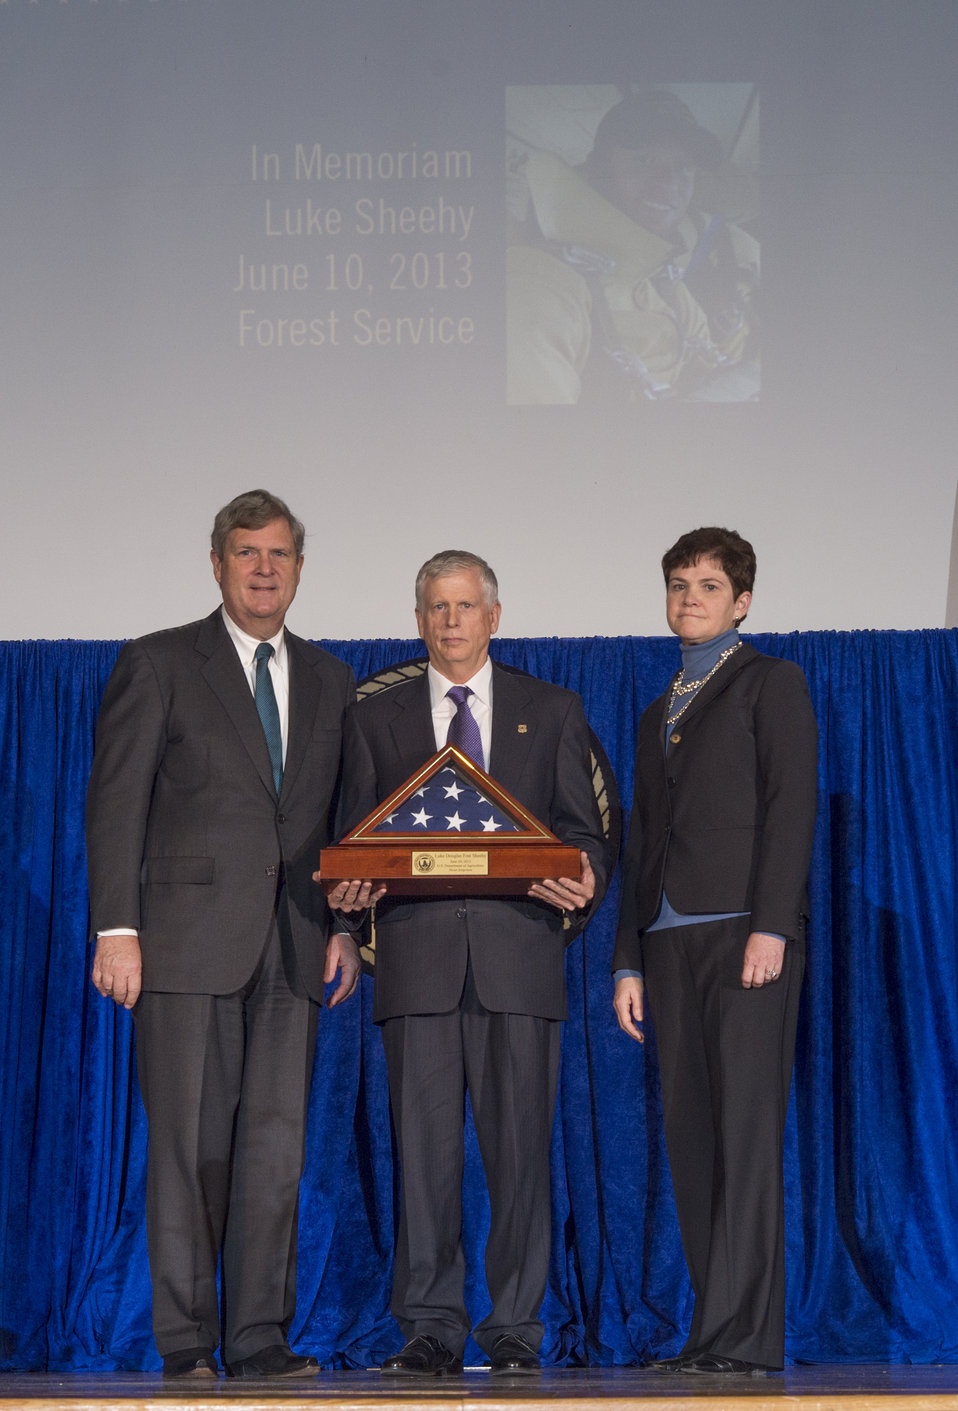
Agriculture Secretary Tom Vilsack and Agriculture Deputy Secretary Krysta Harden present a flag in memory of U.S. Forest Service wildland firefighter Luke Sheehy to U.S. Forest Service Chief Tidwell for Sheehy’s service and sacrifice in the performance of his duty while supporting the U.S. Department of Agriculture’s (USDA) mission at the 2013 Secretary’s Honor Awards in the Jefferson Auditorium at the U.S. Department of Agriculture (USDA) in Washington, D.C. on Wednesday, Dec. 11, 2013. On Monday, Jun. 10, 2013, U.S. Forest Service wildland firefighter Luke Sheehy lost his life while fighting the Saddle Back Fire on the Modoc National Forest in northeast California. Sheehy was a 28 year-old member of the California Smokejumpers based out of Redding, CA.